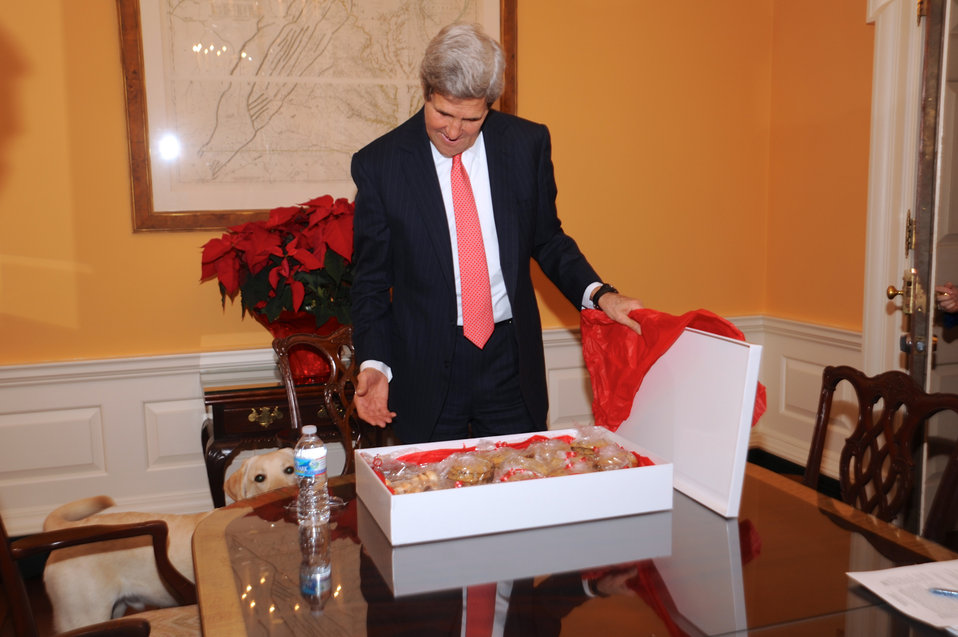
Celebrating Secretary Kerry's 70th Birthday With Cookies

In honor of his 70th birthday, U.S. Secretary of State John Kerry, accompanied by his dog Ben, receives a box of Kilvert and Forbes Bakeshop cookies from his staff at the U.S. Department of State in Washington, D.C., on December 11, 2013. In 1976, the Secretary, a chocolate lover, and his friend and business partner K. Dunn Gifford founded the Boston bakery and named it after their mothers. Though the Secretary is no longer at Kilvert and Forbes, he still loves chocolate.